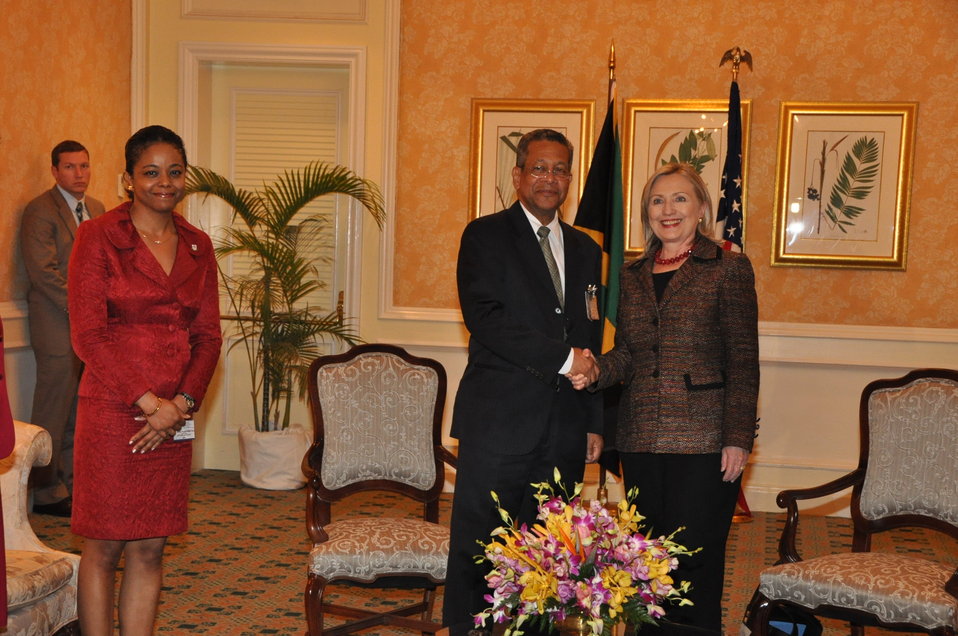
Secretary Clinton Meets With Jamaican Foreign Minister Baugh

U.S. Secretary of State Hillary Rodham Clinton meets with Jamaican Foreign Minister Kenneth Baugh in Montego Bay, Jamaica, on June 22, 2011. Jamaican Senator and Minister of State Marlene Malahoo-Forte is pictured on the left.